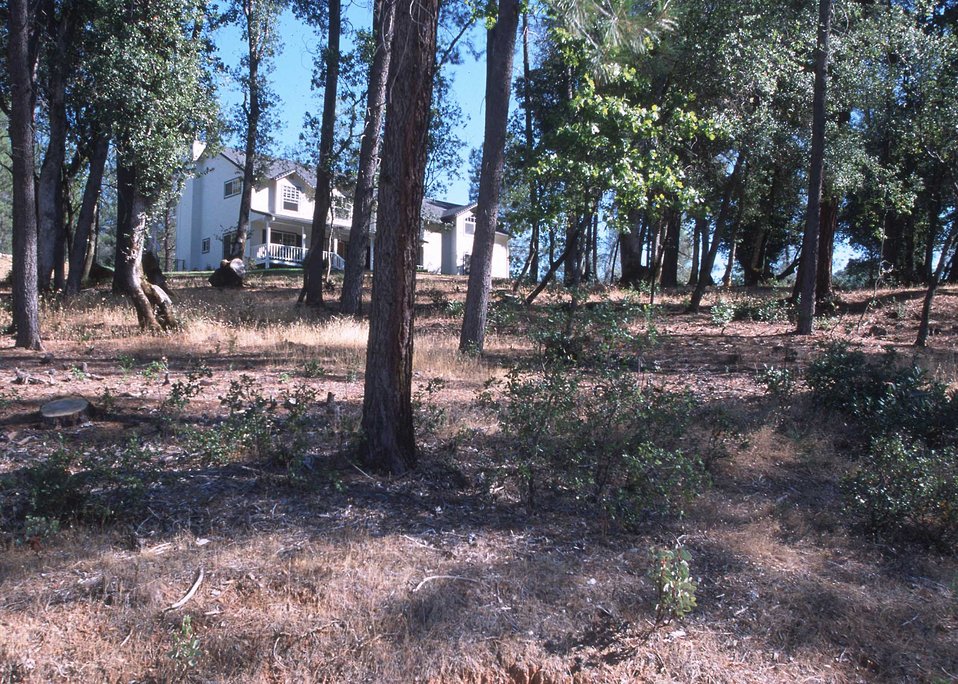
Fuel/brush clearing near a home in the upper Clear Creek Watershed.